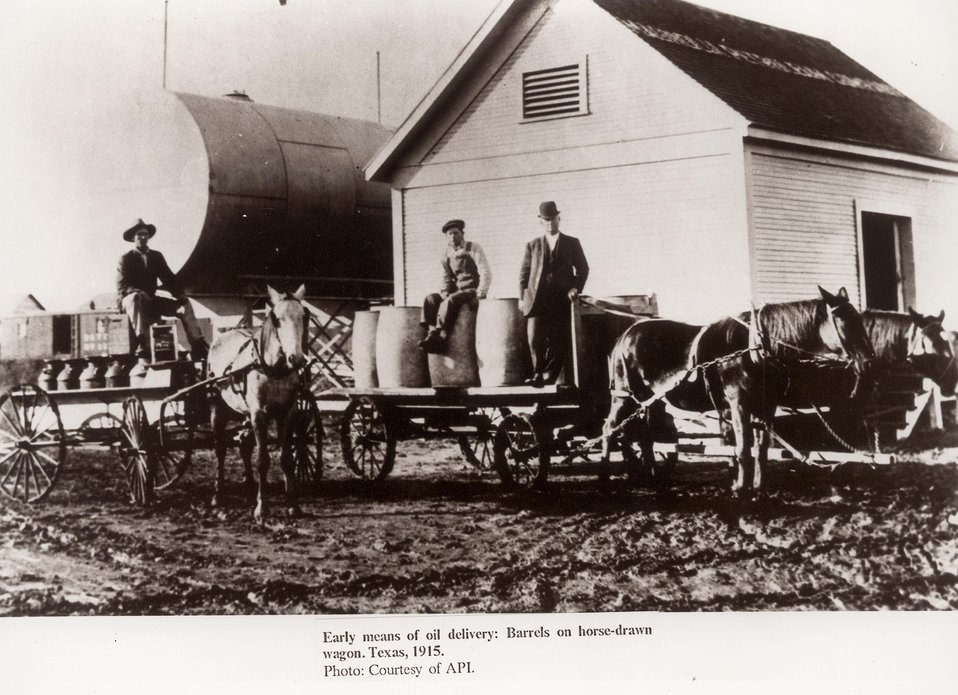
Early means of oil delivery: Barrels on horse drawn wagons, Texas, 1915.